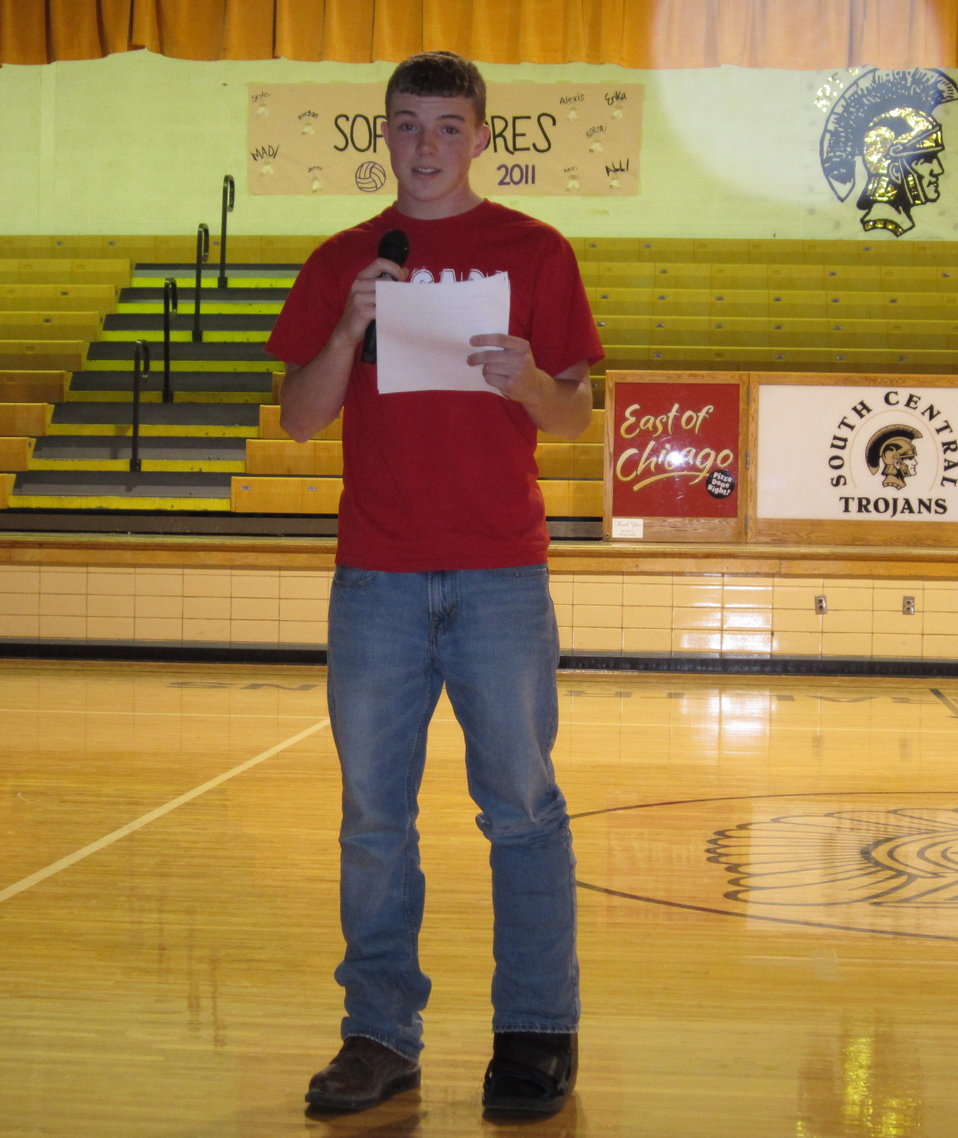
South Central High SADD Assembly Greenwich, OH

SADD President Chad Montgomery giving the welcoming and closing remarks at the NDFW assembly in Greenwich.